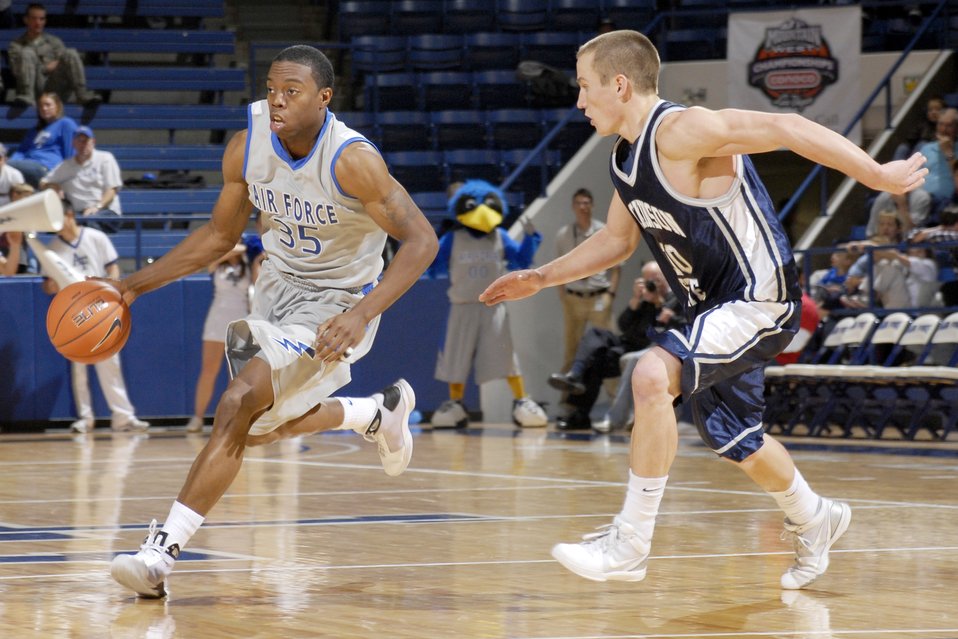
Falcons won 95-77

U.S. Air Force Academy, CO - Evan Washington, a junior guard from Columbus, OH moves the ball up the court past Dickinson State's Nathan Lebsock during the Reggie Minton Air Force Classic at Clune Arena Nov 20. The Falcons won 95-77, but finished the tournament in 2nd place after a 70-46 loss to Northern Colorado in the championship game.